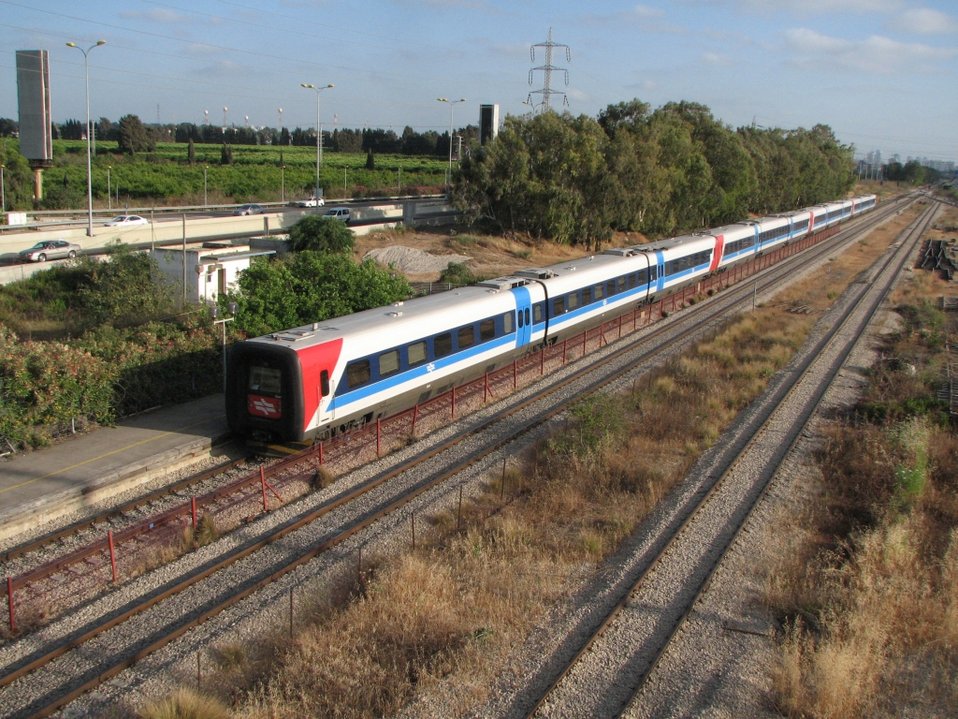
עברית: 5 מערכי קרונועים IC3